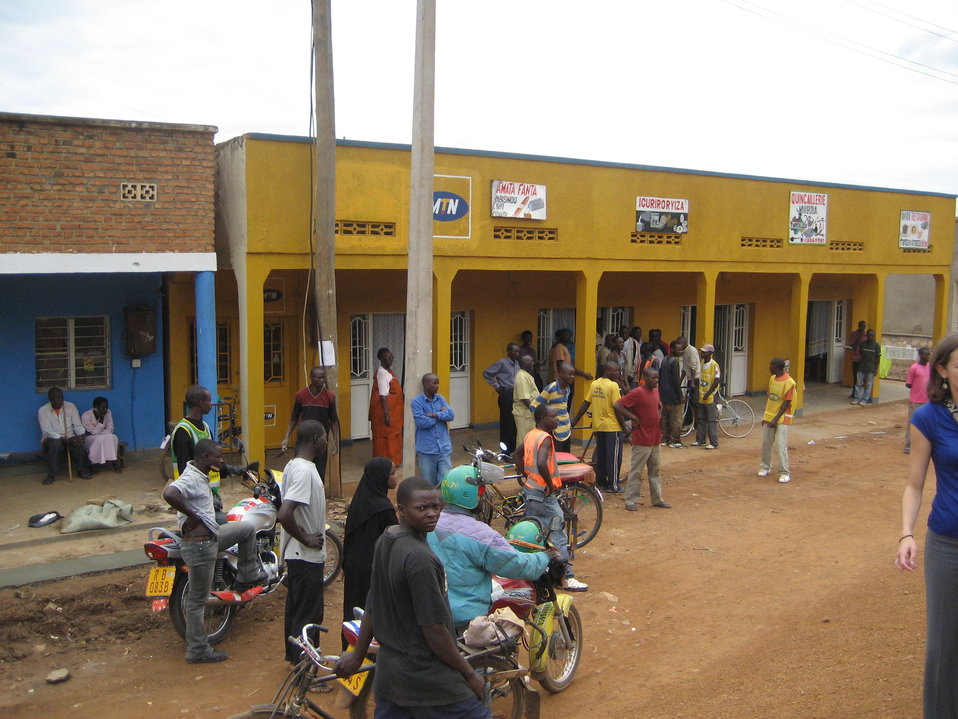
Deputy Secretary Neal Wolin’s trip to Africa 2009

A popular spot…